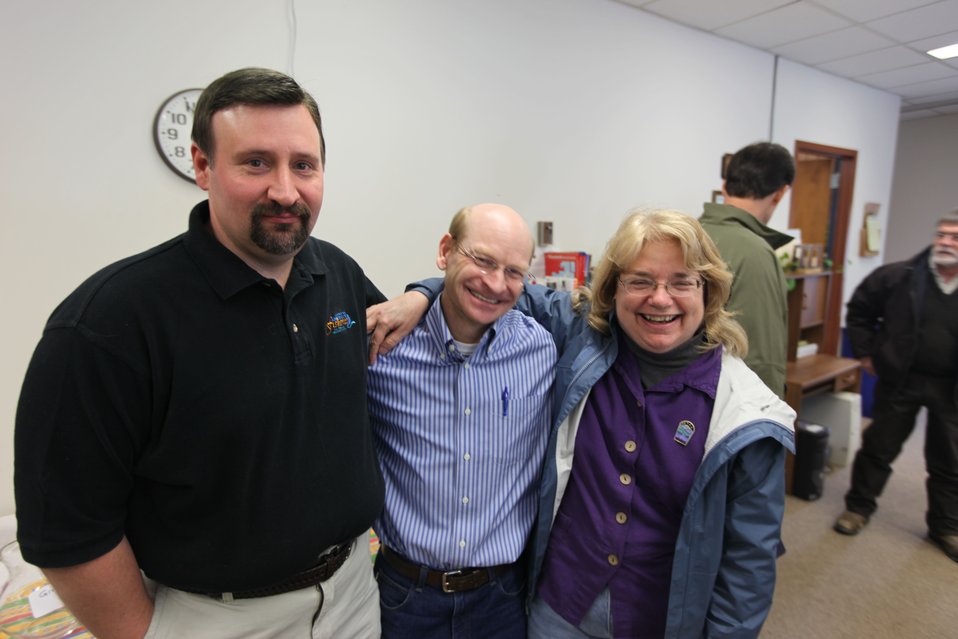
Happy Regional Office staff

U.S. Fish & Wildlife Service Director Dan Ashe visits the Northeast Region
for a tour of the White River National Fish Hatchery in Bethel, Vermont on
April 27, 2012. The hatchery was devastated by Tropical Storm Irene and
Dan Ashe had the chance to meet and thank the staff for their heroic work.
Director Ashe also visited restoration/flood response/fish passage project
sites in Rochester, Vermont and met with local officials and staff from the
White River Partnership.